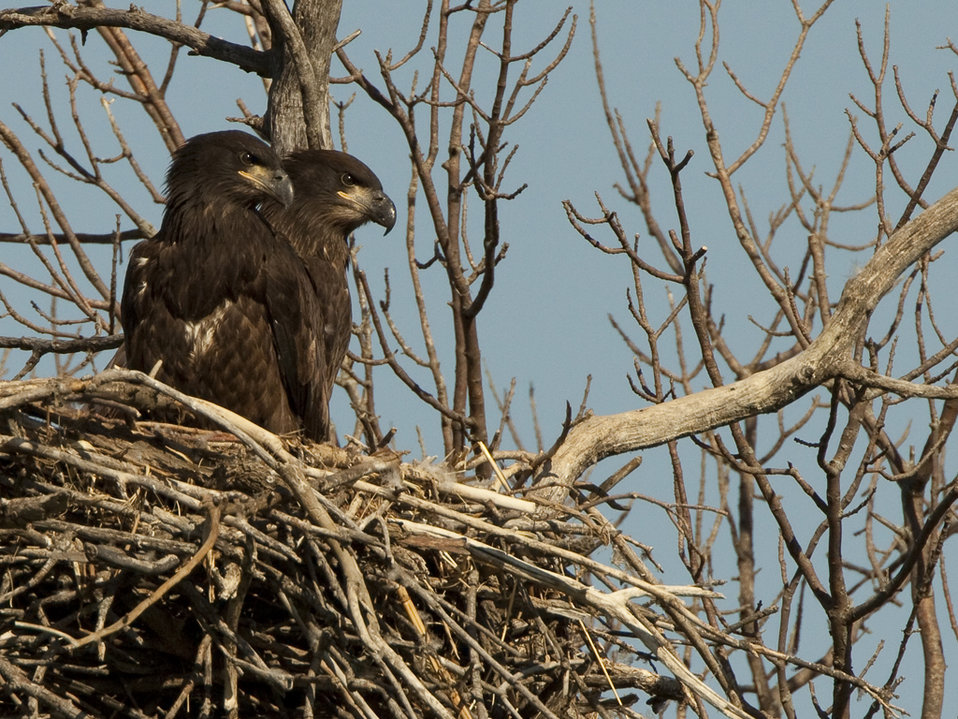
Successful Eagle Nest

Monitored bald eagle nest in Sanborn County SD. Another successful year!